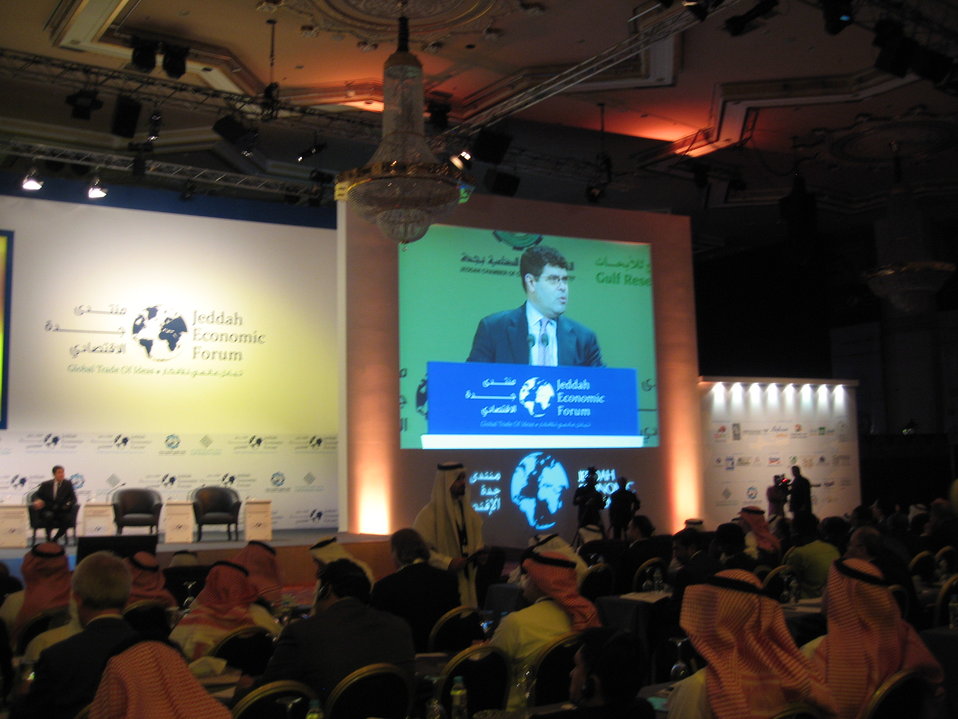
Deputy Secretary Wolin at the Jeddah Economic Forum

On Sunday, February 14, Deputy Secretary Wolin speaks at the Jeddah Economic Forum in Saudi Arabia.